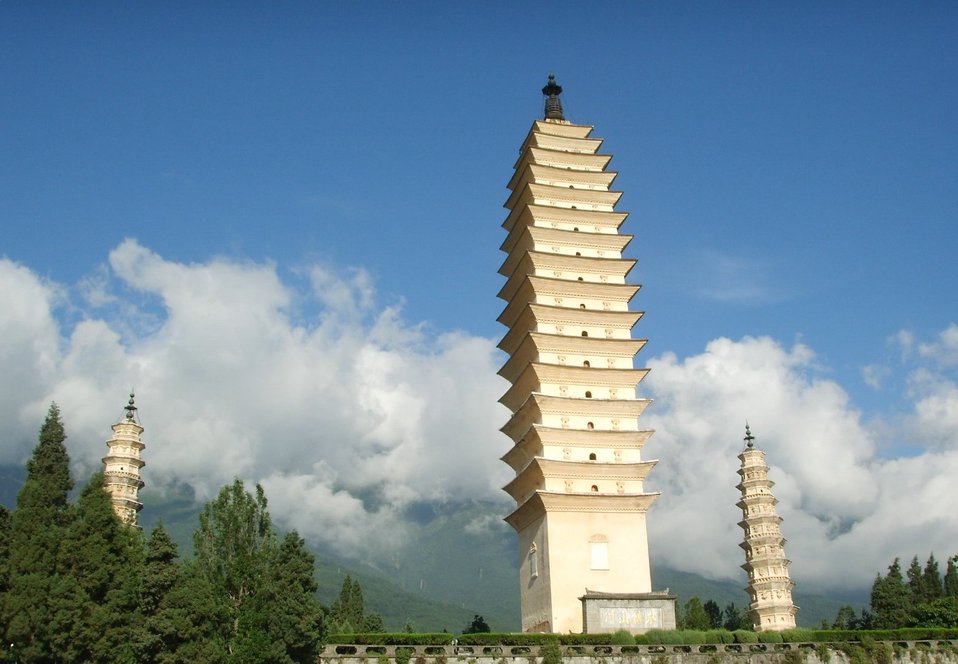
大理三塔